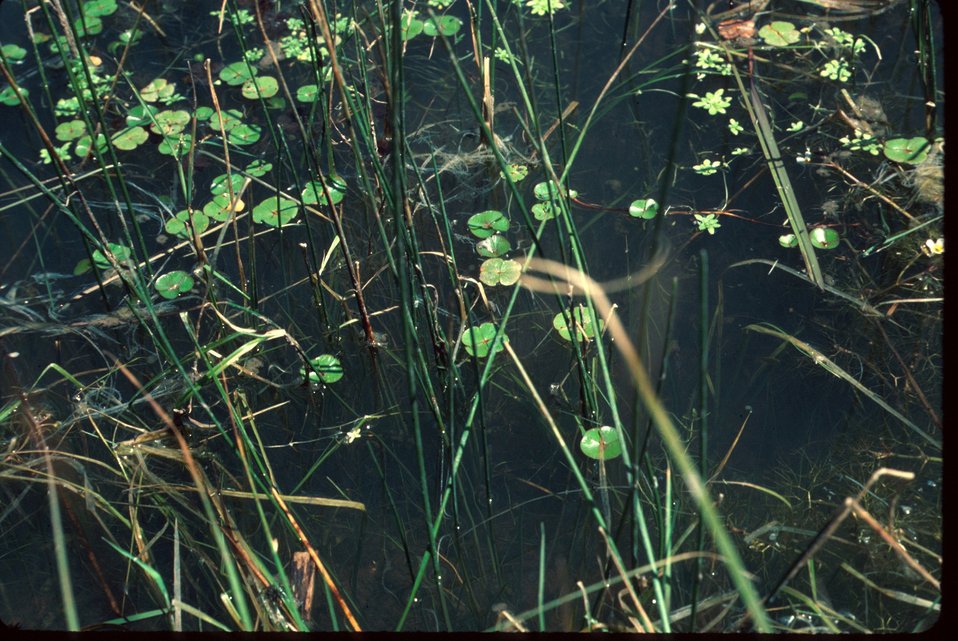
Marsilea vestita Clover fern Pond in the Pleasant Valley Table Owyhee field office Wildflower, fern, aquatic